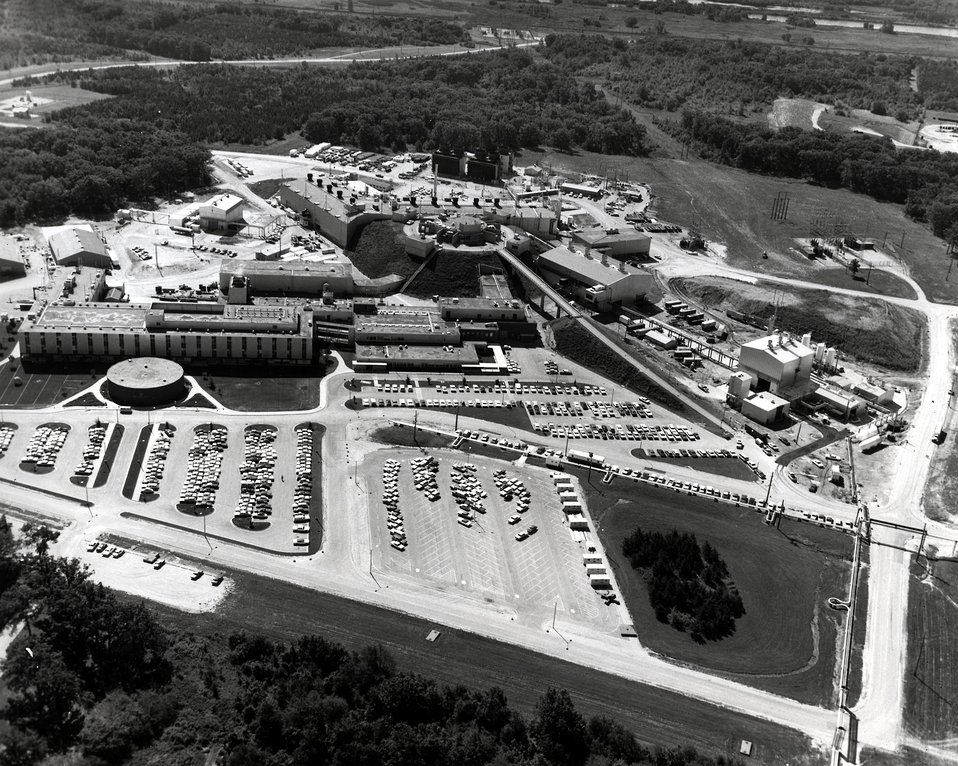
An aerial view of ZGS. The high energy physics building is on the left. The ZGS Accelerator ring is contained in a circular concrete building beneath the mound of the earth at the center of the picture.
c.1969